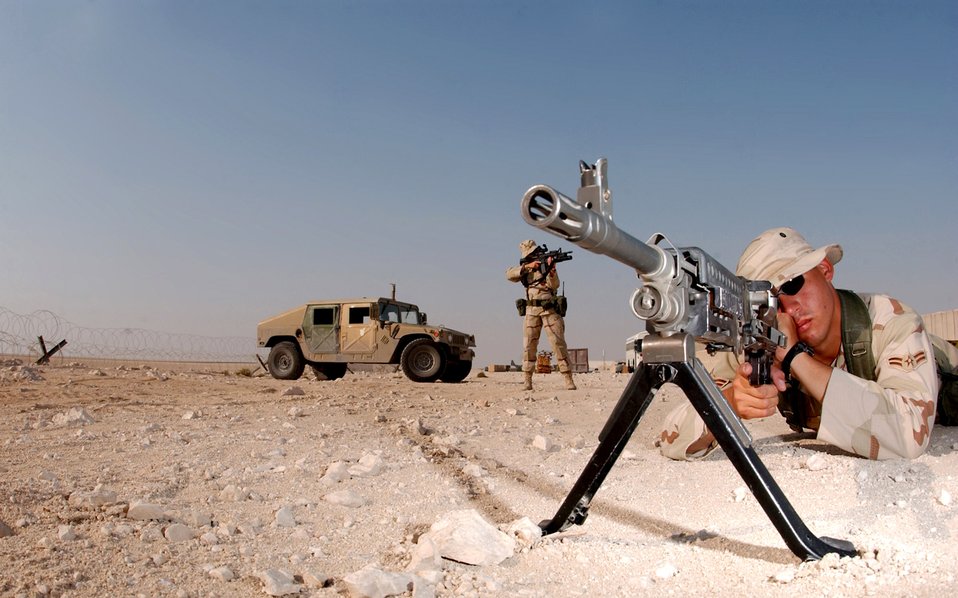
Security Forces in combat

Airman 1st Class Joshua Hurley and Airman 1st Class Ashley-Marie Wilson, both with the 379th Security Forces Squadron, maintain watch somewhere in the deserts of Southwest Asia.